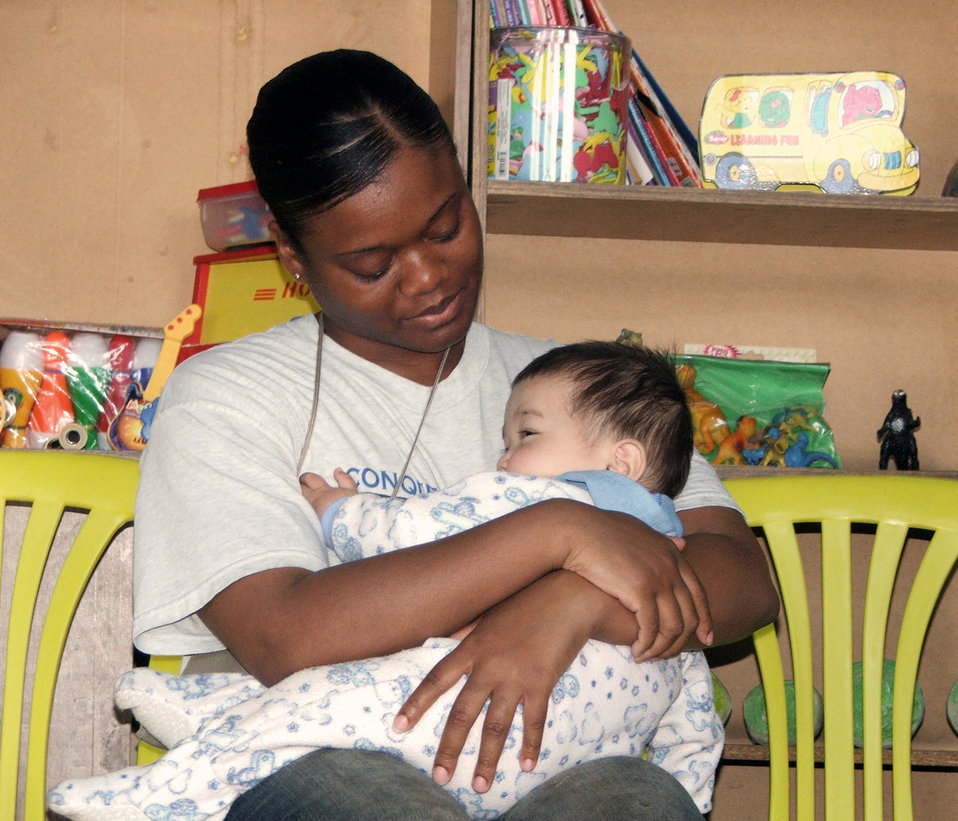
Airmen, Soldiers donate goods to Uzbek baby orphanage

QITAB, Uzbekistan -- Staff Sgt. Lakeitha Luster holds an Uzbek baby during a humanitarian assistance visit to a baby orphanage here. Airmen, Soldiers and civilians from nearby Karshi-Khanabad Air Base visited the orphanage and handed out handmade baby quilts, baby formula, diapers, clothes and toys. Sergeant Luster is assigned to the 416th Expeditionary Mission Support Squadron's civil engineer flight and is deployed from Randolph Air Force Base, Texas.